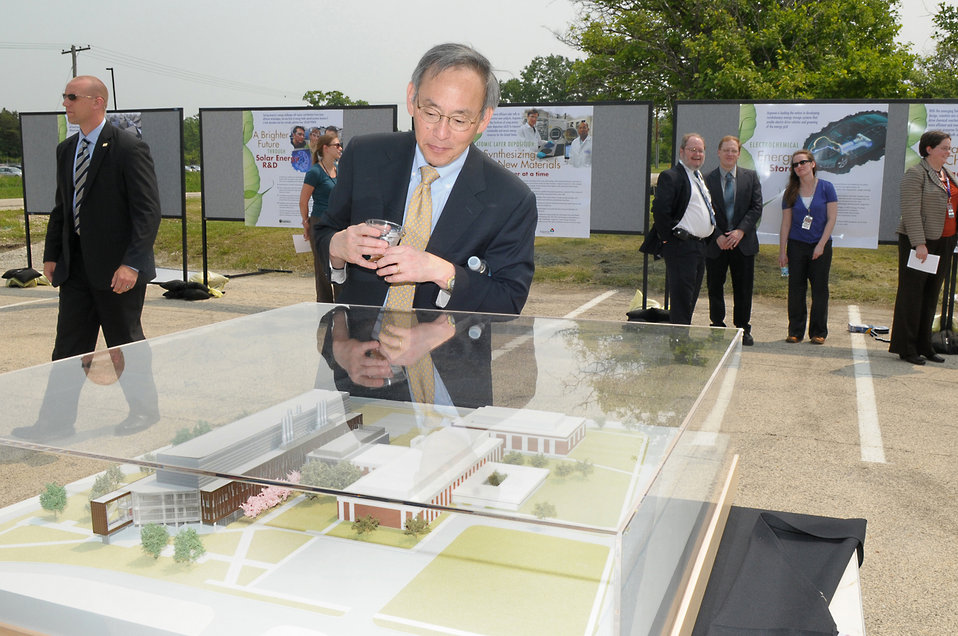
Energy Secretary Steven Chu speaks at the groundbreaking ceremony for Argonne National Laboratory's Energy Sciences Building.
The Energy Sciences building will house some 200 research personnel dedicated to addressing the world's most critical energy challenges. The facility will be key in getting our scientists and engineers to deliver on our mission; doing basic science to generate, supply, transmit, store and use new energy. The building will bring together many different scientists to collaborate and create new knowledge for this new economy. The building is scheduled to be complete in 2013.